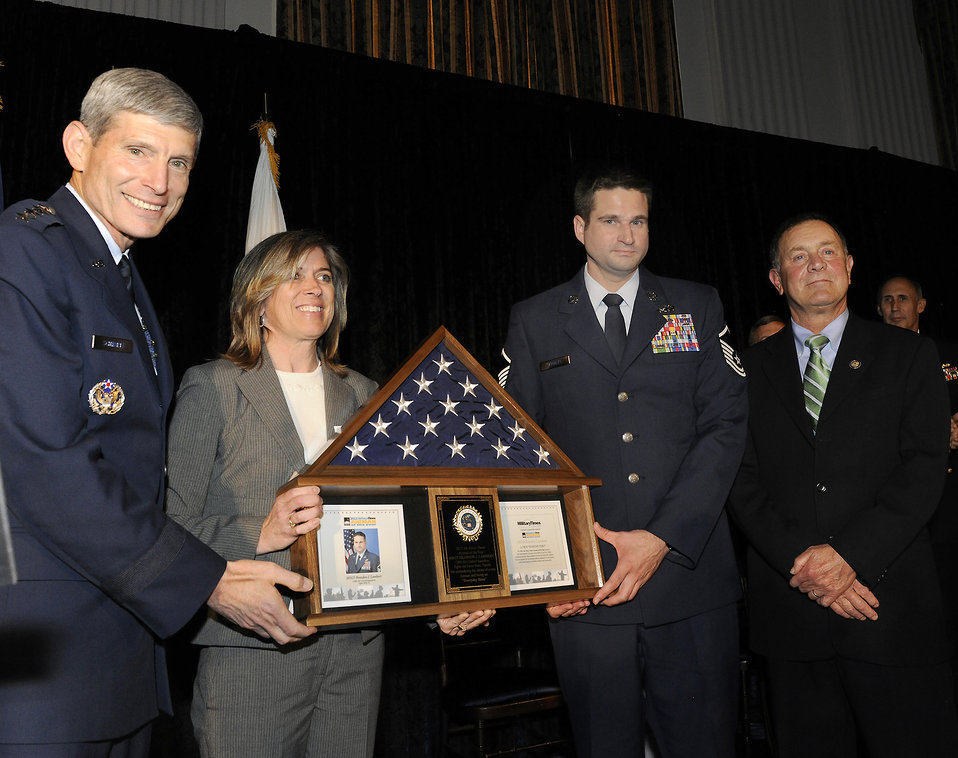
Times Airman of the Year

Air Force Chief of Staff Gen. Norton Schwartz and Becky Iannotta, Air Force Times managing editor, present Master Sgt. Bandon Lambert with the Times 2012 Airman of the Year award. Lambert, from the 728th Air Control Squadron, Eglin Air Force Base, Fla., was also presented by Rep. Richard Hanna, who is from Lambert's home district.